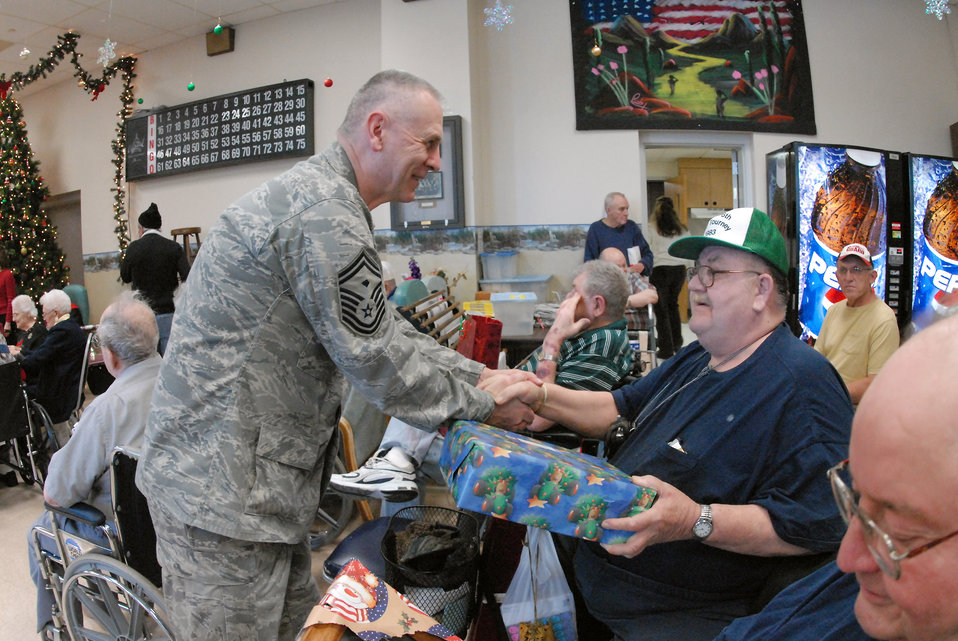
Airmen deliver Christmas

Senior Master Sgt. Paul Tangen gives a Christmas gift to Army Vietnam War veteran Roger Severson at the North Dakota Veteran's Nursing Home Dec. 10 in Lisbon, N.D. The gifts are given to veterans at the nursing home by the North Dakota Air and Army National Guard each December using funds raised through personal donations given by the North Dakota National Guard members. Sergeant Tangen is the the 119th Wing first sergeant.